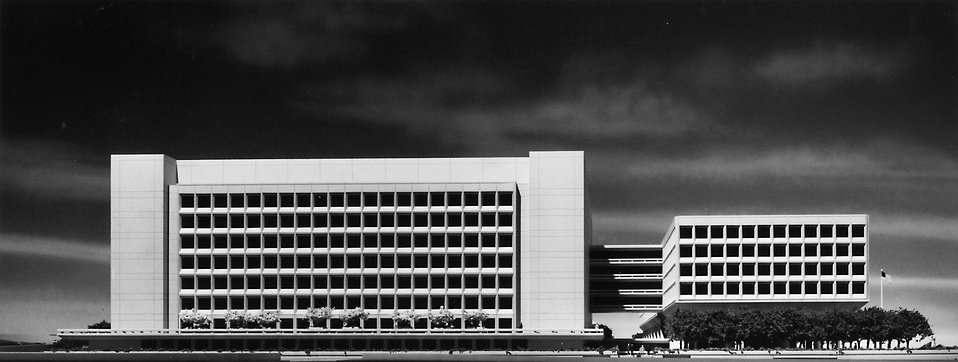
Federal Office building No. 5 Washington DC